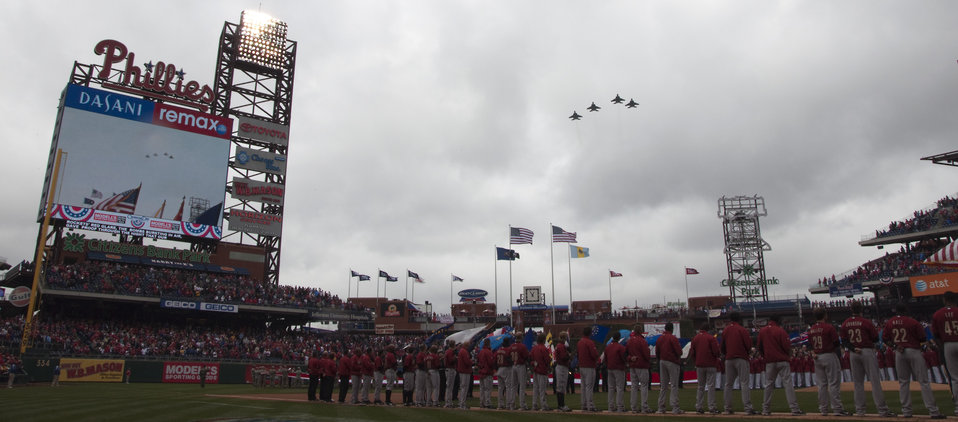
Alternative Fuel

Three of four F-15E Strike Eagles from Seymour Johnson Air Force Base, N.C., performed a flyover for the first time using a blend of traditional jet fuel and biofuel. The aircraft were participating in the Philadelphia Phillies Opening Day activities April 1, 2011.